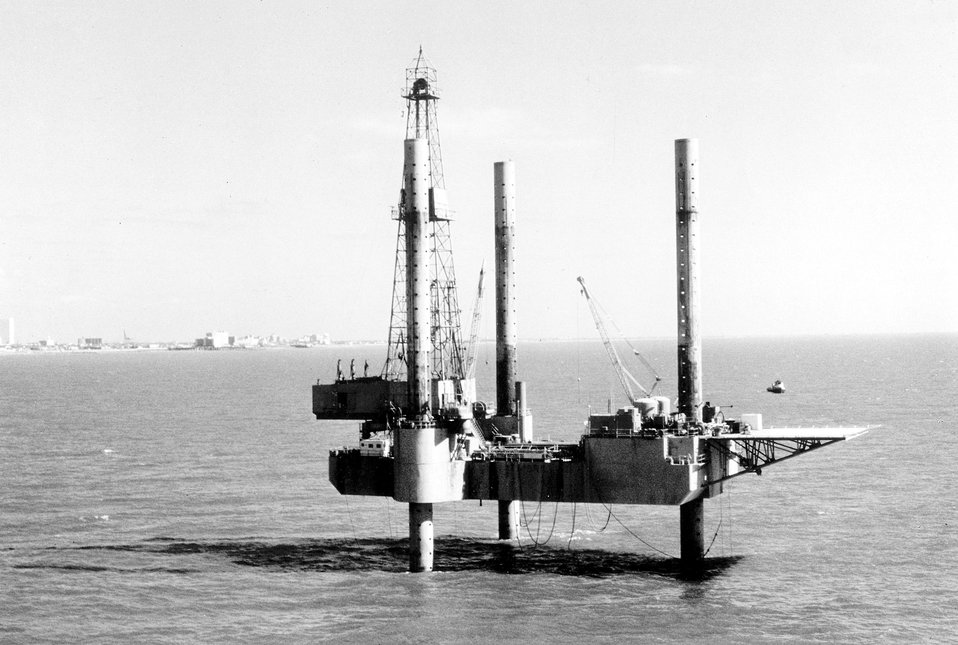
A drilling rig probes for oil and gas 1 1/2 miles off the coast of Galveston, Texas. c. undated